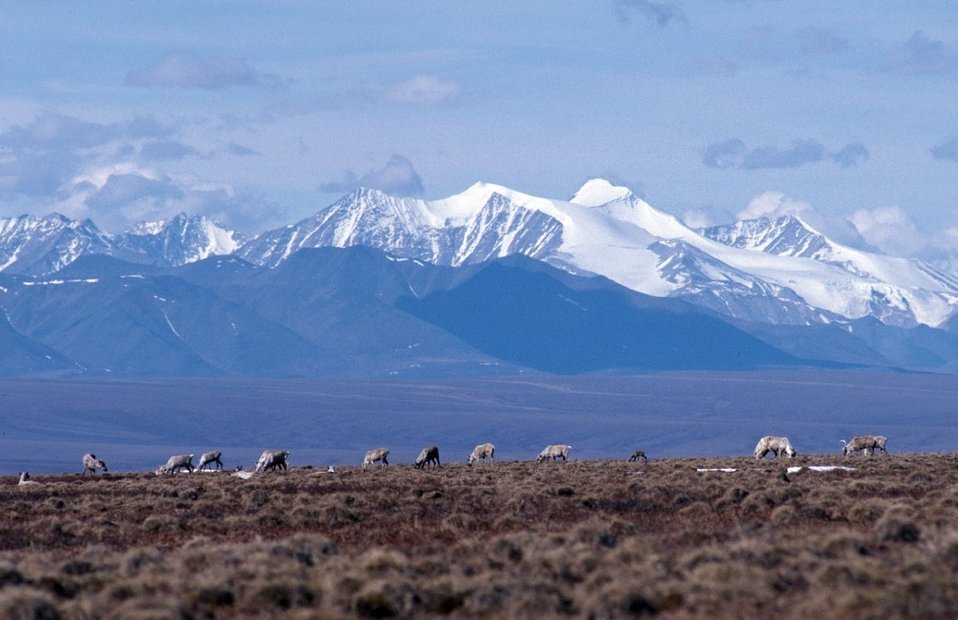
Caribou and Brooks Range, Arctic NWR

Caribou graze on the coastal plain of the Arctic National Wildlife Refuge, with the Brooks Range as a backdrop. (USFWS)